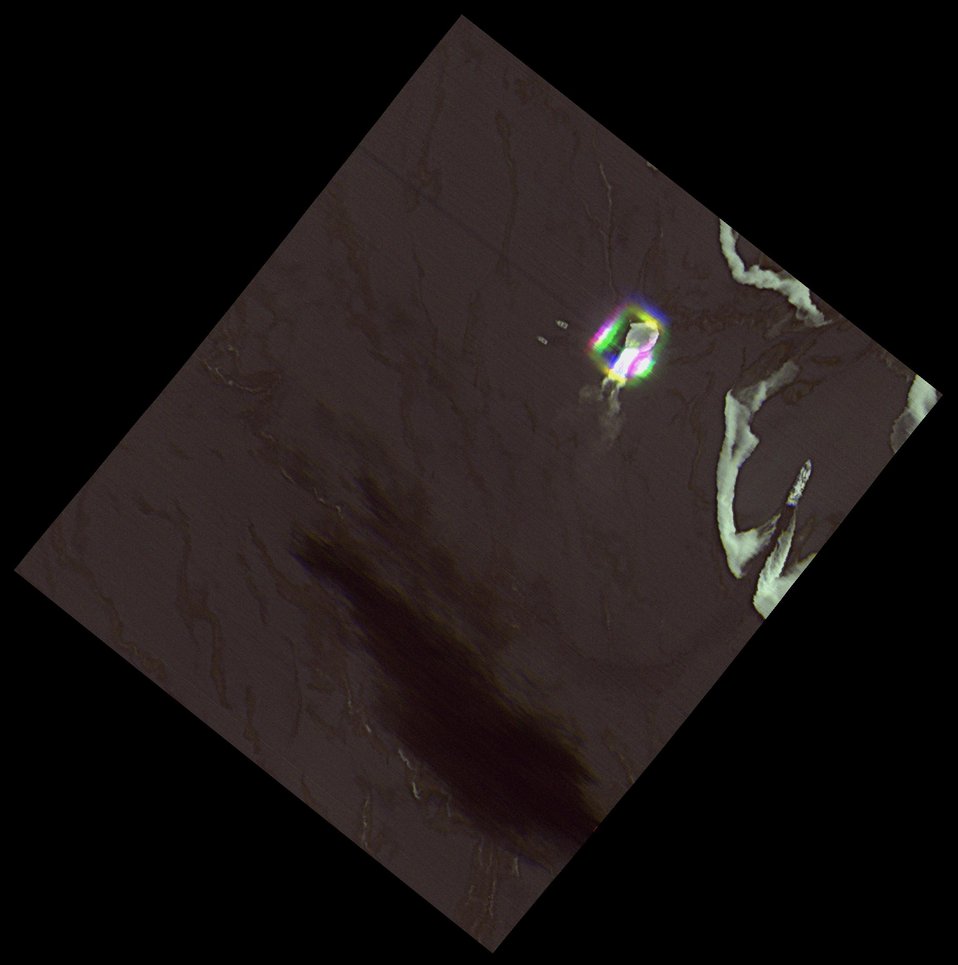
Infrared image of open-water oil burn

Infrared image of an open-water oil burn. The white circle is the fire and the white streaks are oil. You can see a ship that navigated through the oil stream.

Photo taken from U.S. EPA's Airborne Spectralphotometric Environmental Collection Technology (ASPECT) aircraft.